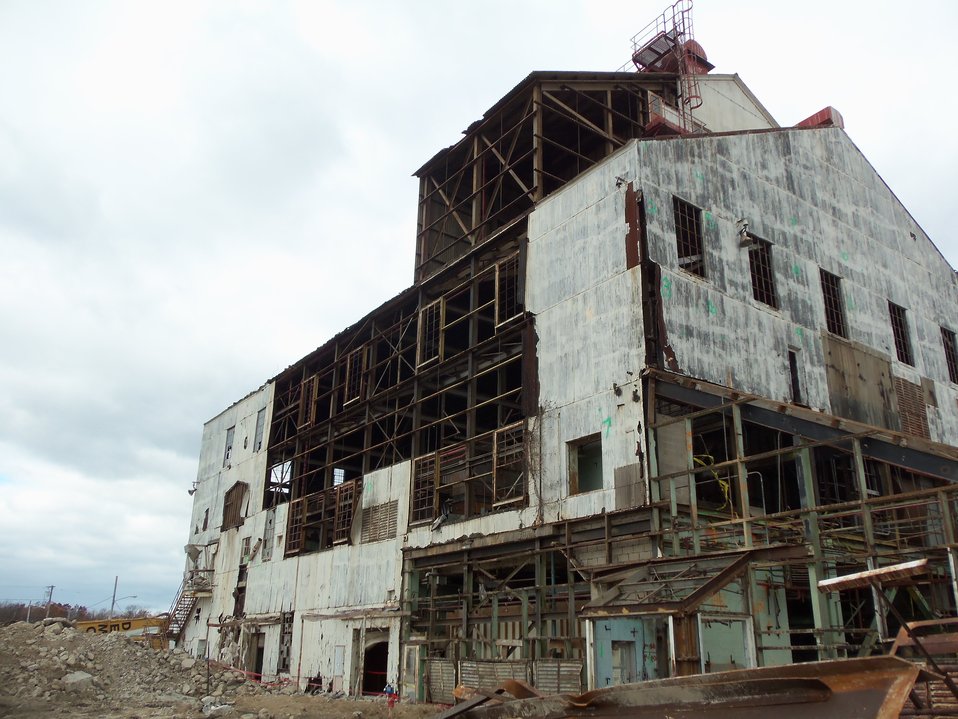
NFSS BUILDING 401 MID-DECONSTRUCTION

Activities from the Niagara Falls Storage Site, which is associated with the former Lake Ontario Ordnance Works. Formerly Utilized Sites Remedial Action Program (FUSRAP), a program initiated in 1974 to identify, investigate and clean up or control sites that were part of the Nation's early atomic energy and weapons program. Activities at the sites that are eligible for FUSRAP were conducted by Manhattan Engineer District (MED) or the Atomic Energy Commission (AEC), both predecessors of the Department of Energy (DOE). The U.S. Army Corps of Engineers was assigned management of FUSRAP by Congress in 1997.